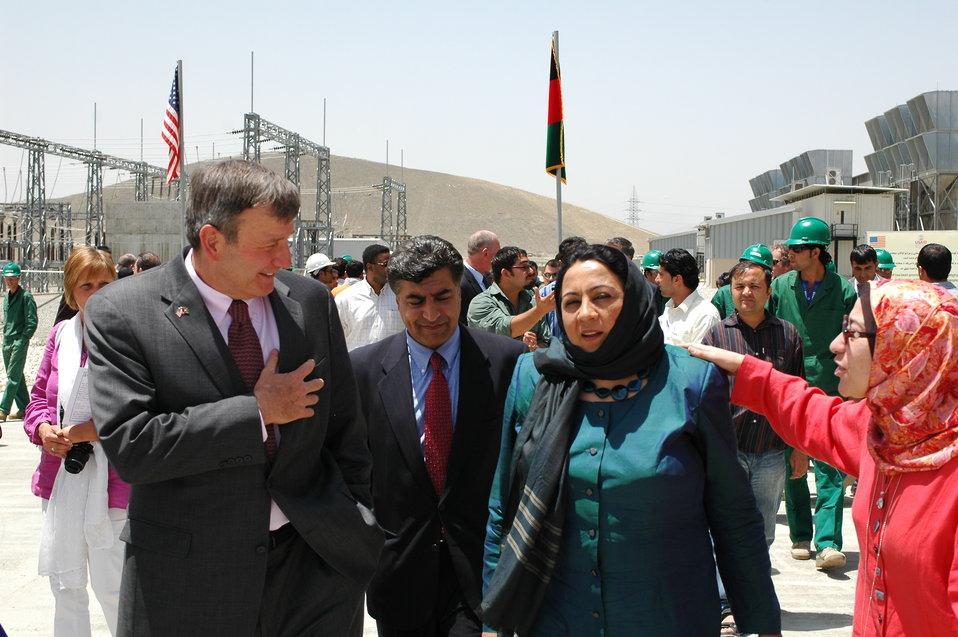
105 MW Tarakhil Power Plant Handover